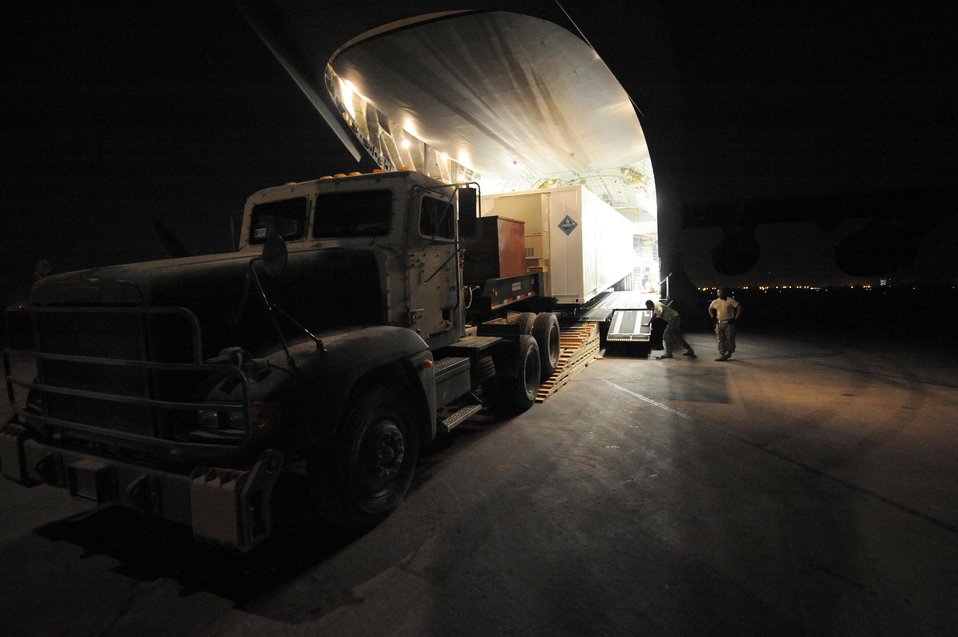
No cargo too large for Sather aerial port Airmen

A 10-ton armored tractor eases its way out of a C-17 Globemaster III cargo aircraft as it unloads a new communication trailer designed to provide phone service to the entire Victory Base Complex in Baghdad. Airmen from the 447th Air Expeditionary Group and Soldiers from the 553rd Combat Sustainment Support Battalion joined forces to deliver two of the 66-foot, 80,000 pound trailers safely.